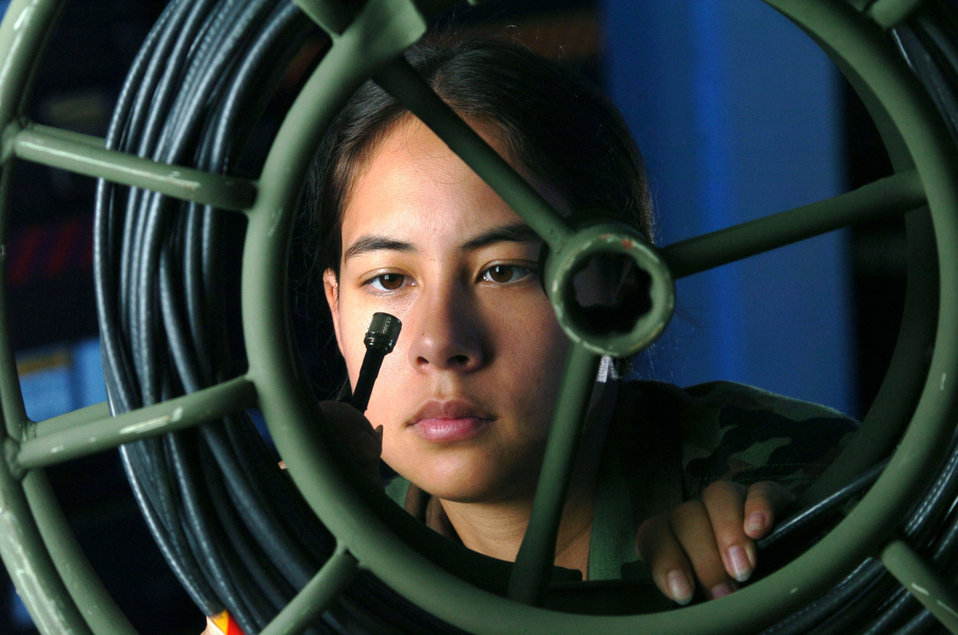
Eye spy

KADENA AIR BASE, Japan -- Senior Airman Kristina Paliwoda checks the end of a coaxial cable for damage during an inspection here. She is a communications technician assigned to the 353rd Operations Support Squadron.